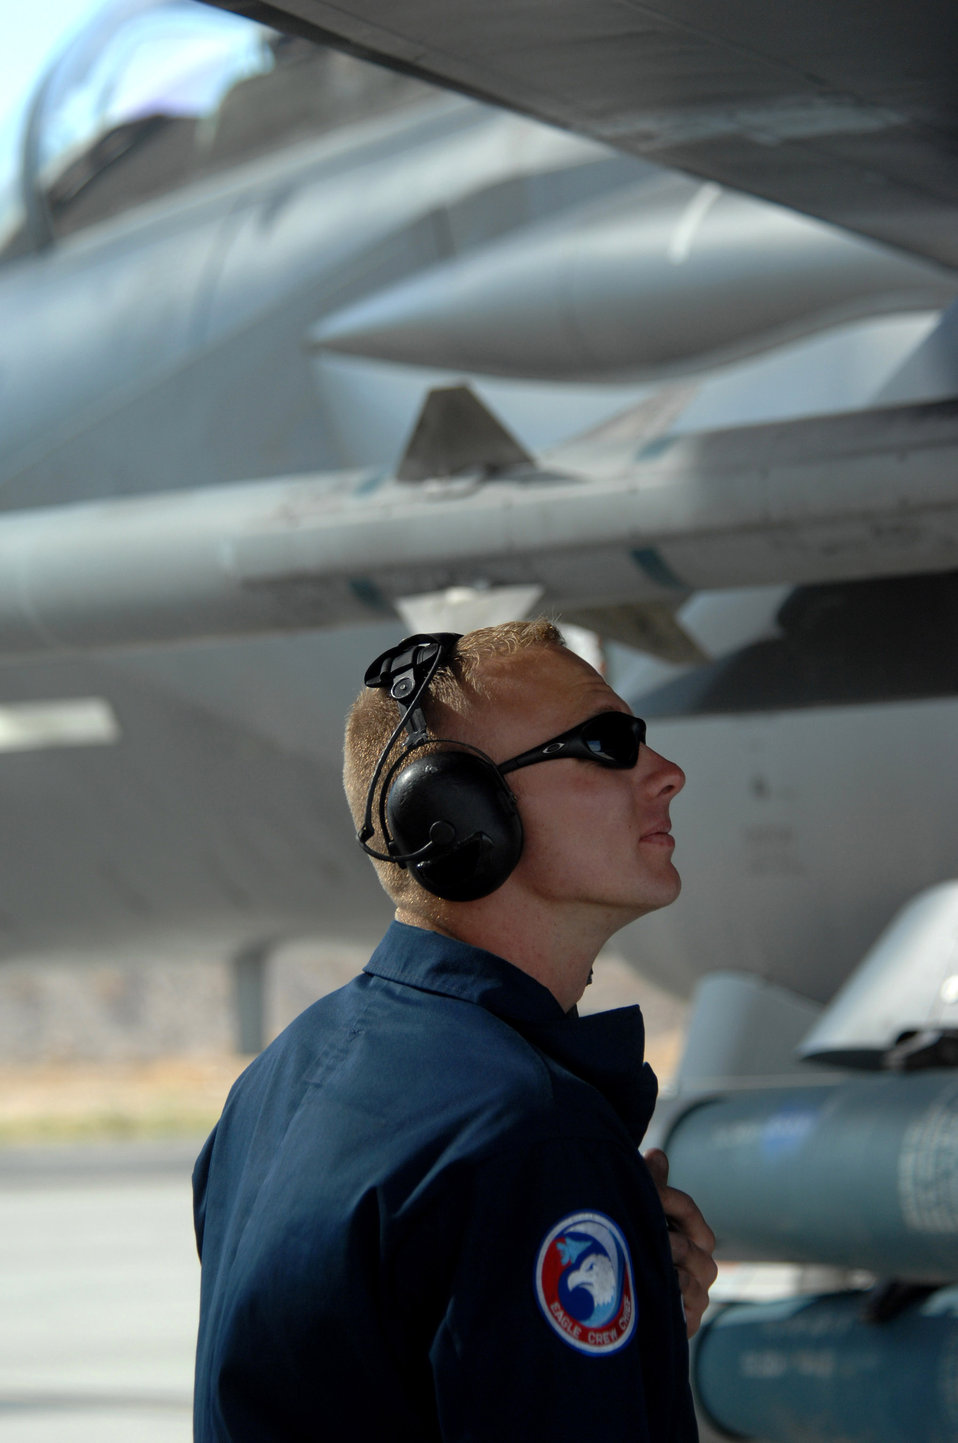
Green Flag launches Strike Eagles into the air

Airman 1st Class Travis Davis launches an F-15E Strike Eagle in support of Exercise Green Flag April 24 at Nellis Air Force Base, Nev. Green Flag is Air Combat Command's premier pre-deployment exercise for units who perform close-air support. The training exercise, which began April 19 and runs through May 4, mirrors many of the irregular warfare-conditions aircrews will see while fighting the war on terrorism. During Green Flag, aircrews will try to learn better ways to employ airpower within an irregular warfare environment. Airman Davis is a crew chief assigned to the 335th Fighter Squadron from Seymor Johnson AFB, N.C.